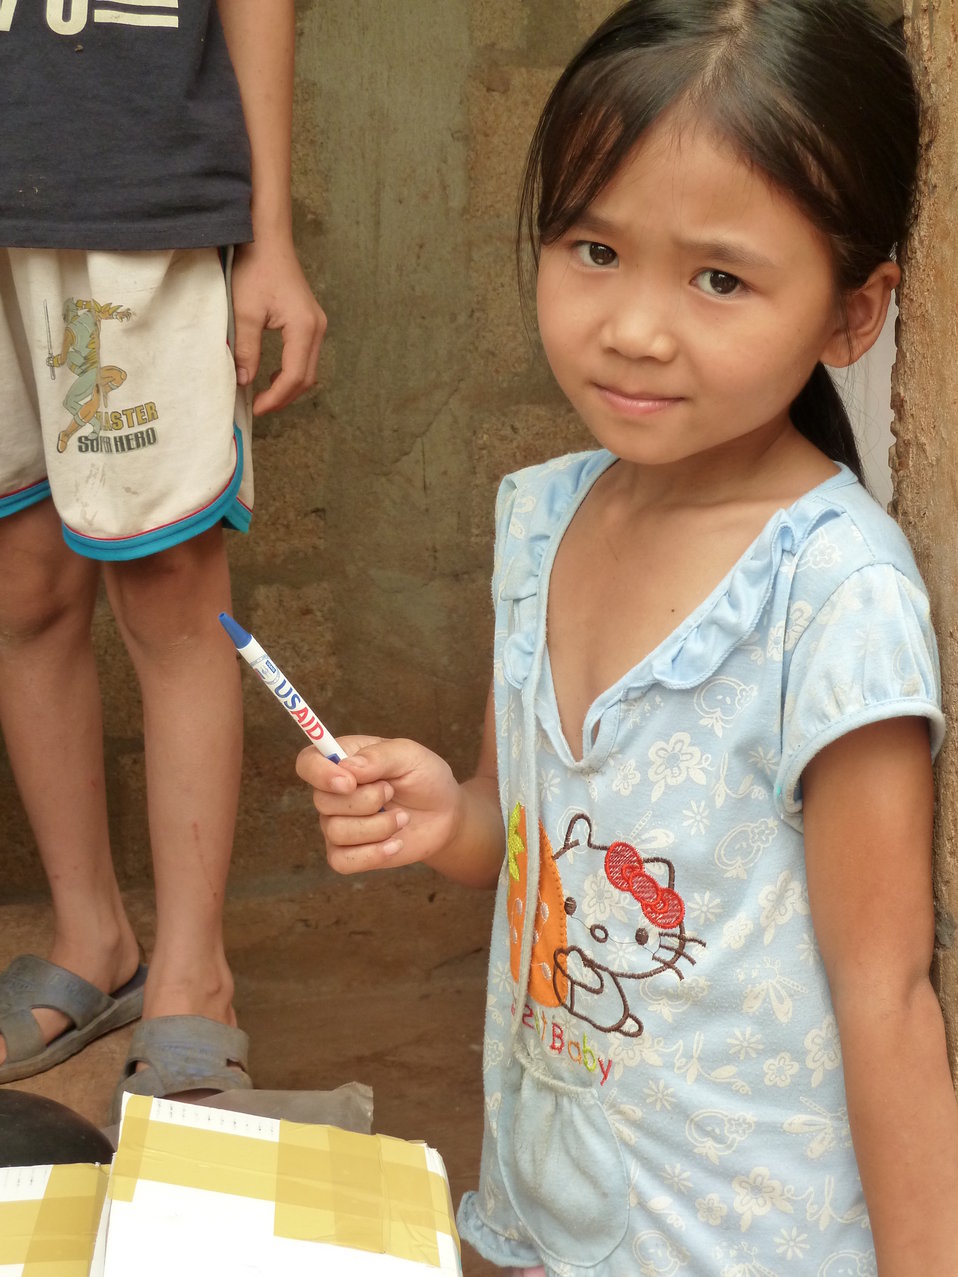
A young girl receives a USAID pen during an animal health worker training in Quang Tri Province.